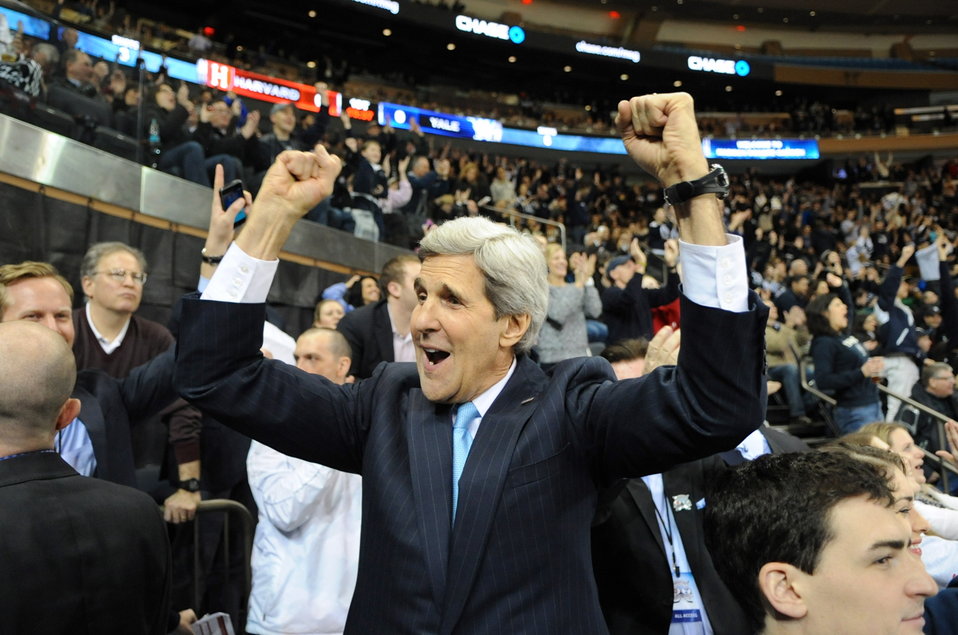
Secretary Kerry Celebrates as Yale Scores First Goal in Game Against Harvard

U.S. Secretary of State John Kerry celebrates after the men's varsity hockey team from his alma mater, Yale University, scored the first goal in its game against archival Harvard University at Madison Square Garden in New York, NY, on January 11, 2014.